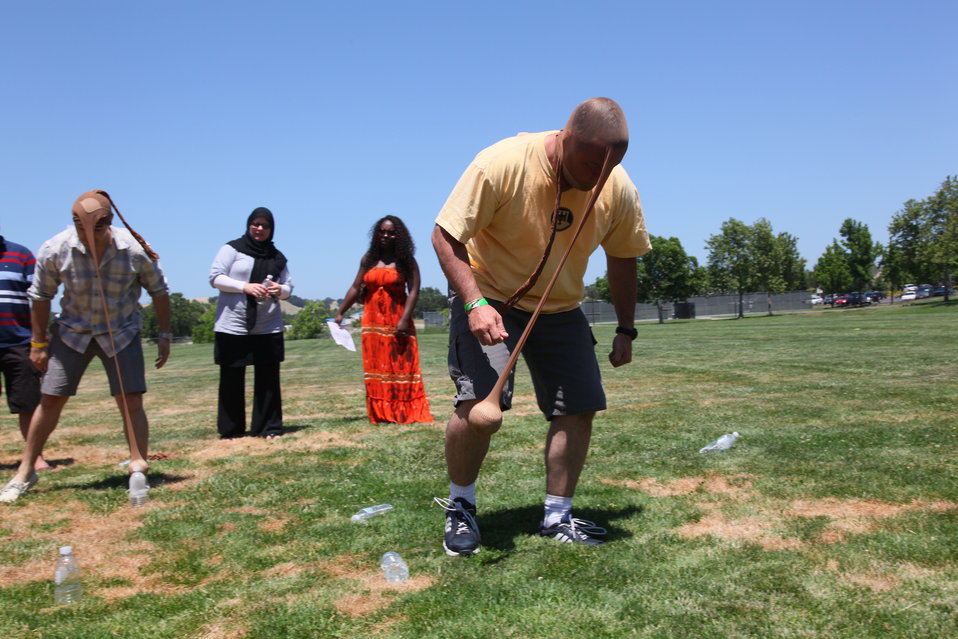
2011 Annual Picnic